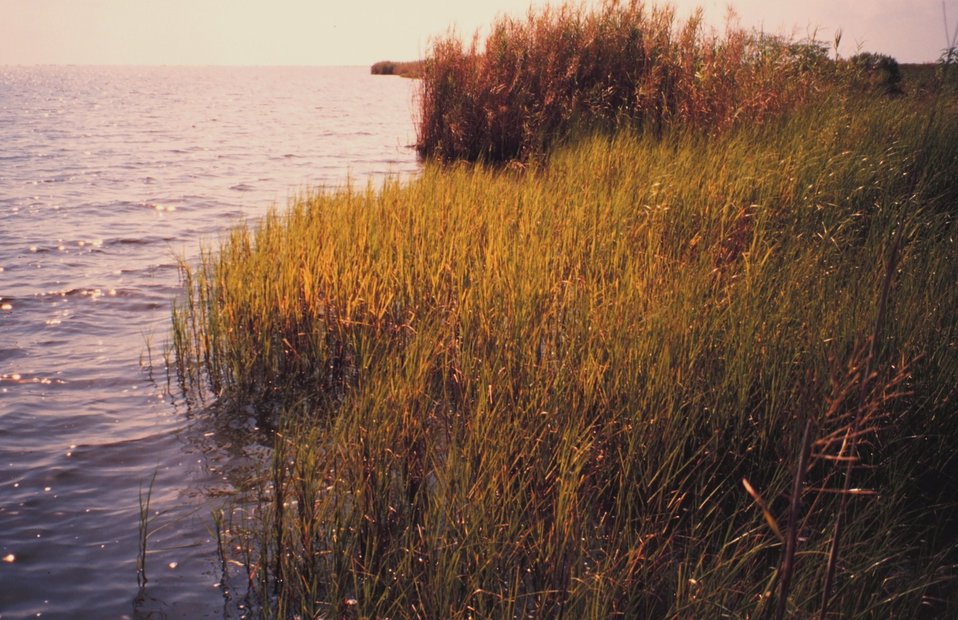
Fringing marsh along a small bay outside west levee of lower Mississippi River.